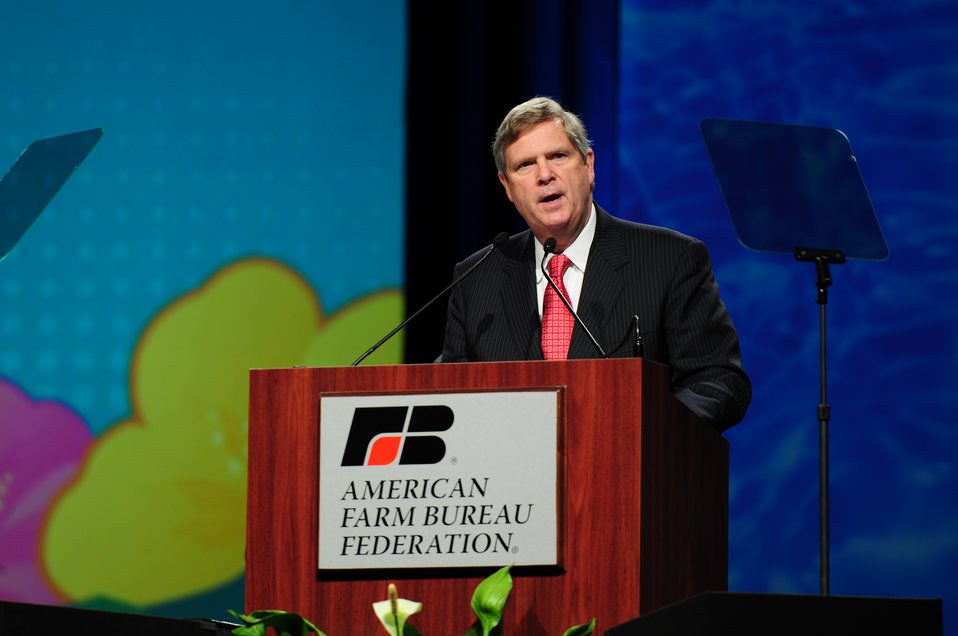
Agriculture Secretary Tom Vilsack speaks at the American Farm Bureau Annual Meeting Closing Ceremony at the Convention Center in Waikiki, Hawaii, on Sunday, January 9, 2012.